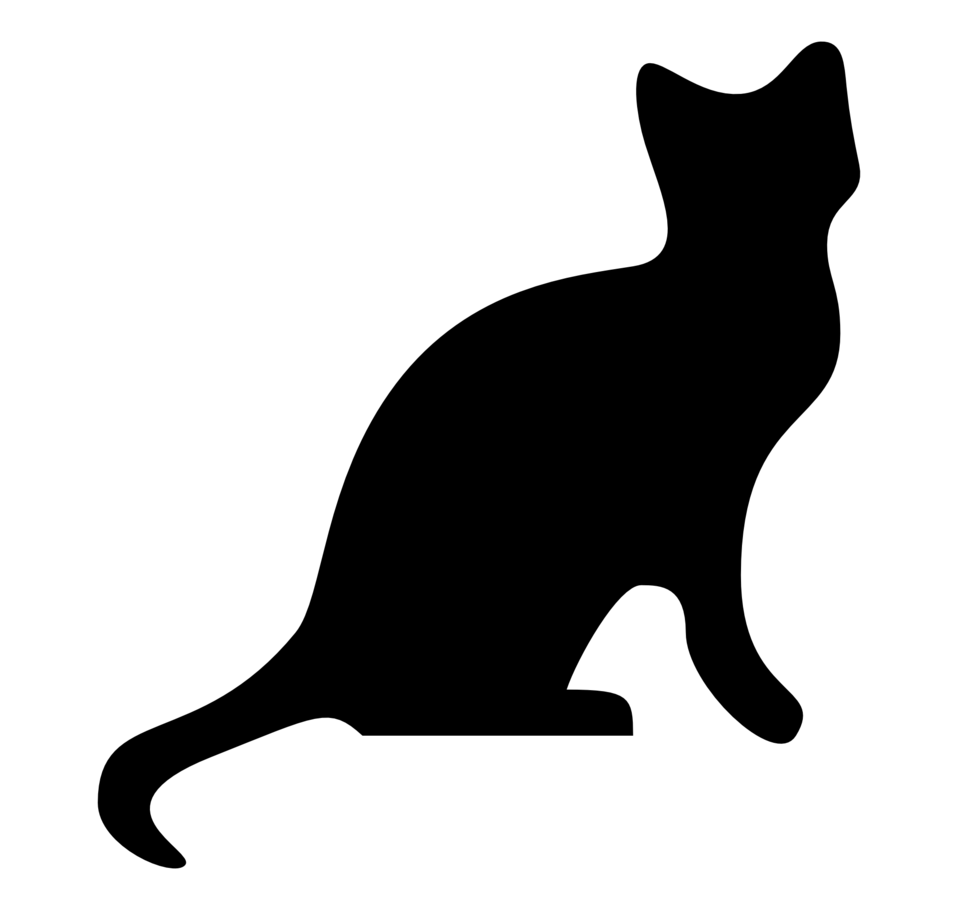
Cat silhouette